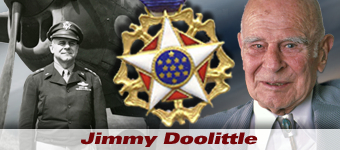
General Doolittle

Gen. Jimmy Doolittle history spotlight graphic .